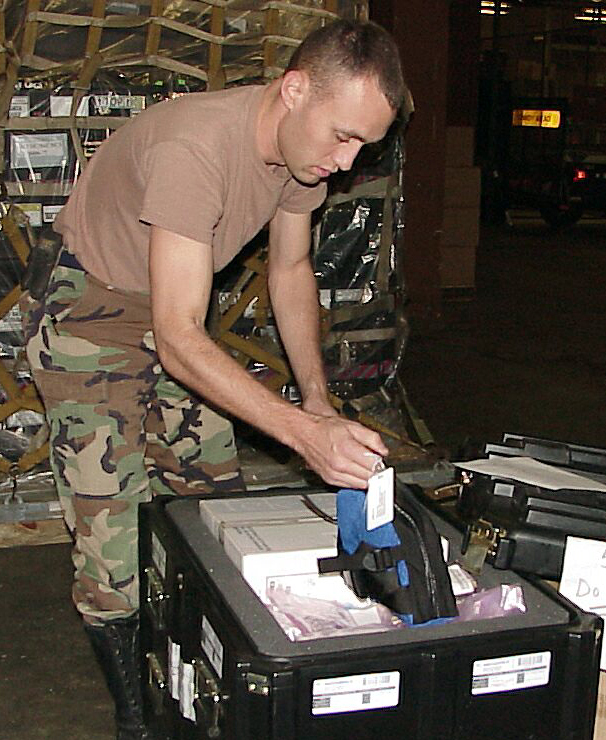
Packing up

ROBINS AIR FORCE BASE, Ga. -- Staff Sgt. Ian Powell checks a fiber optic repair kit before putting it on a pallet. Powell is assigned to the 54th Combat Communications Squadron at Robins Air Force Base, Ga. The 54th CCS is part of the 5th Combat Communications Group which received orders to deploy to the U.S. Central Command theater of operations.